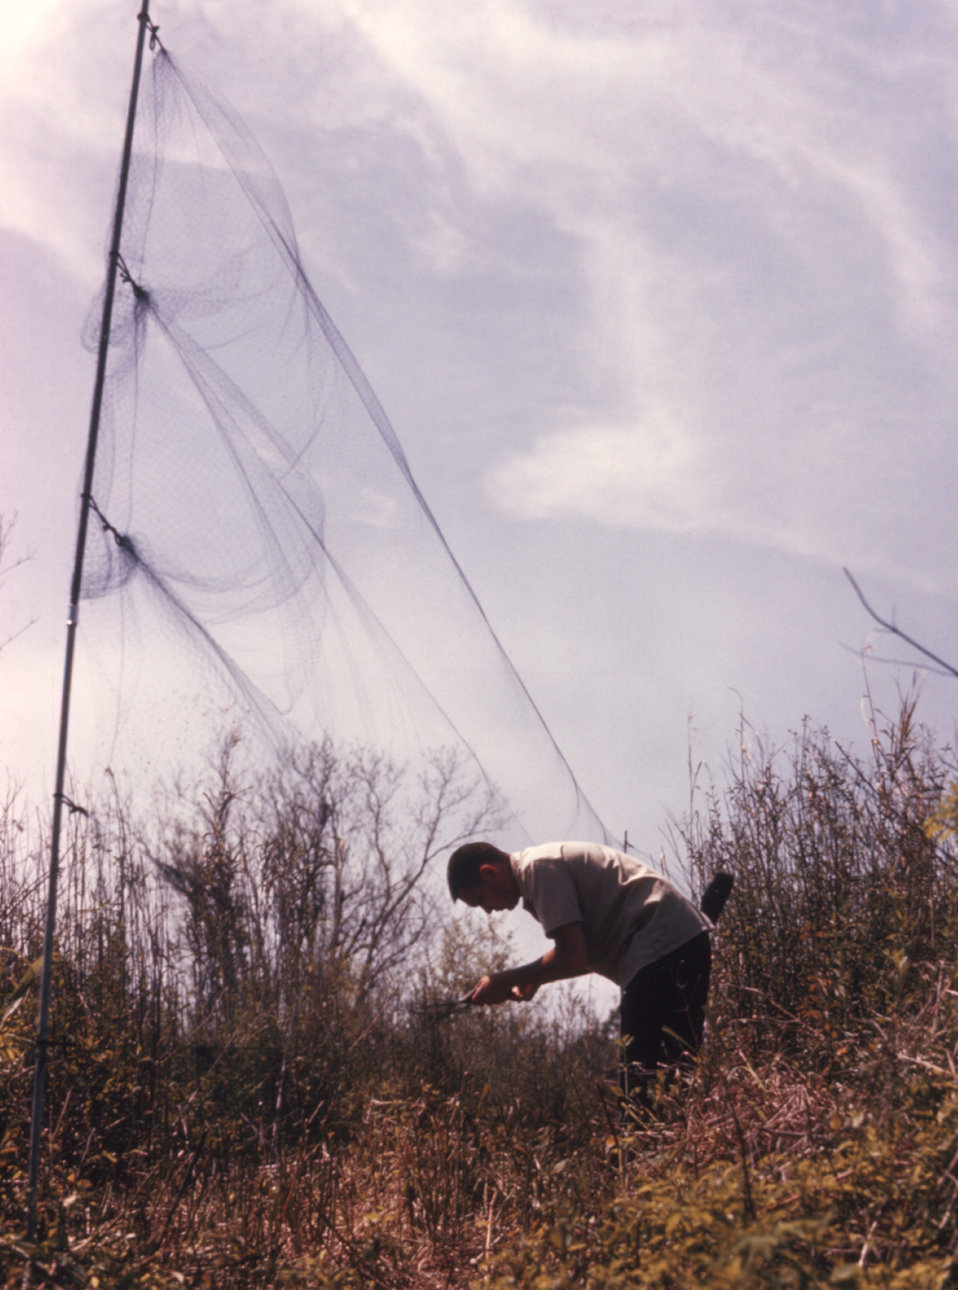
This individual is removing a bird from a net, which was later tested for an arbovirus infection.